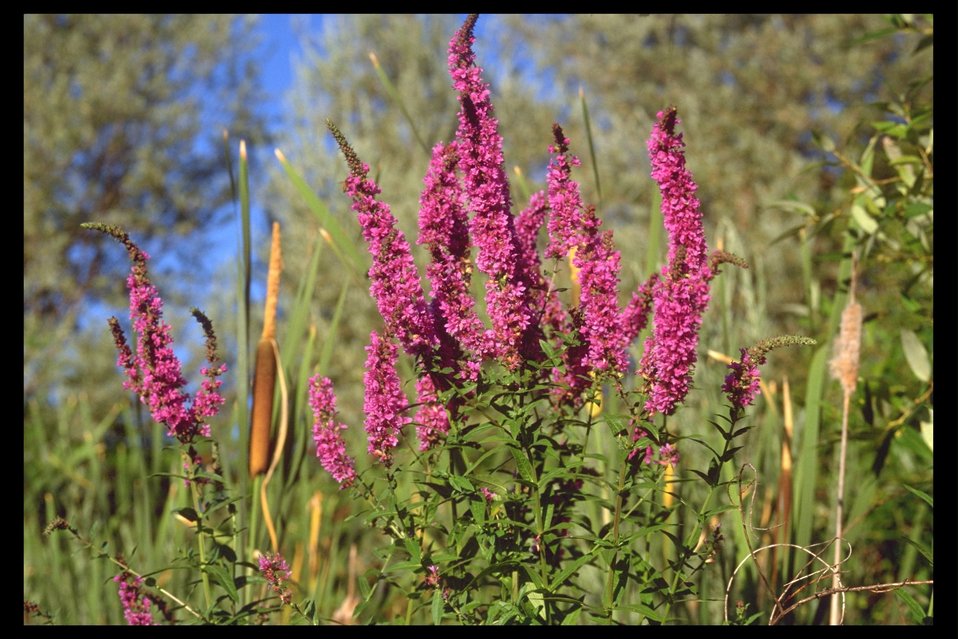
Purple Loosestrife (Lythrum salicaria), a noxious weed, found at city park in Medford at Springbrook and Spring Street.